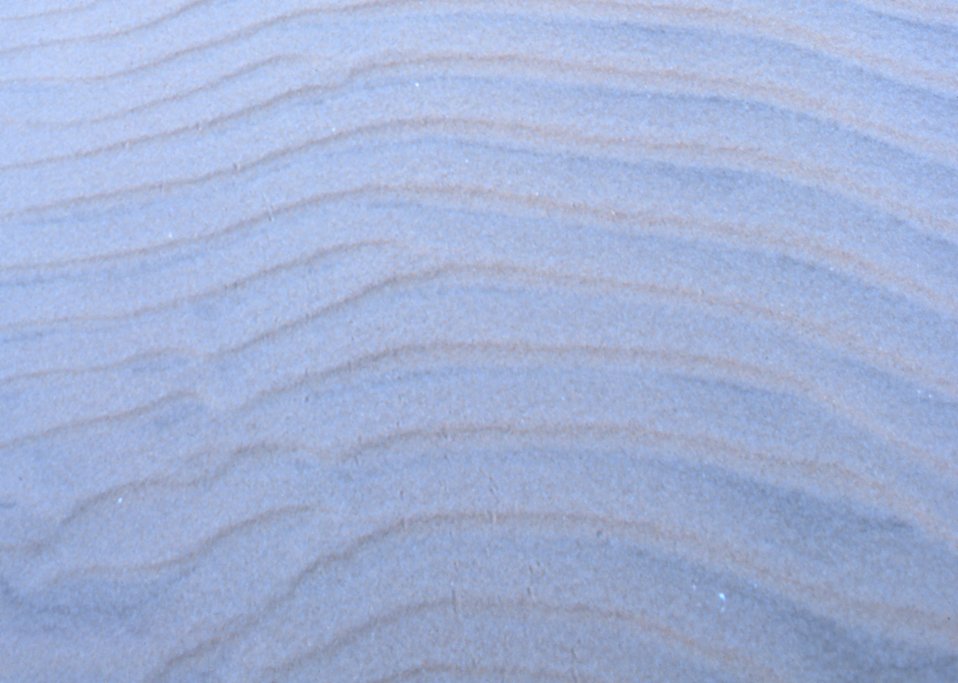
Wind-swept dunes near the abandoned Coast Guard Station